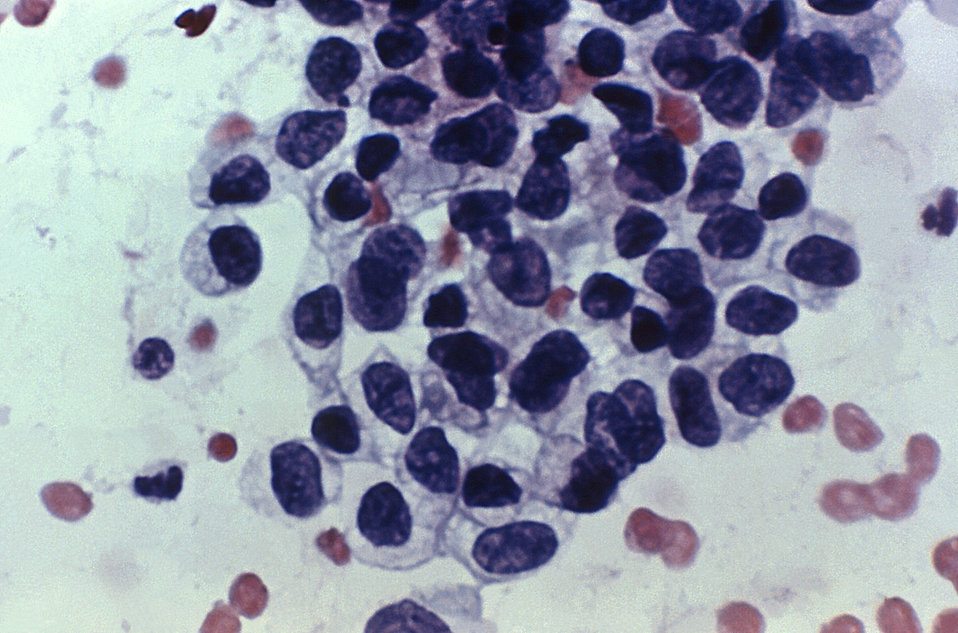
Under a magnification of 645X, this Papanicolaou stained (Pap stain) photomicrograph reveals some of the ultrastructural histopathologic changes found in a vaginal tissue biopsy specimen indicative of adenocarcinoma of the vagina. In this case, involving a teenage girl, it was believed that the onset of this cancer may have been due to the fact that the patient's mother had taken diethylstilbestrol (DES) while pregnant, as a treatment to avoid a possible spontaneous abortion.